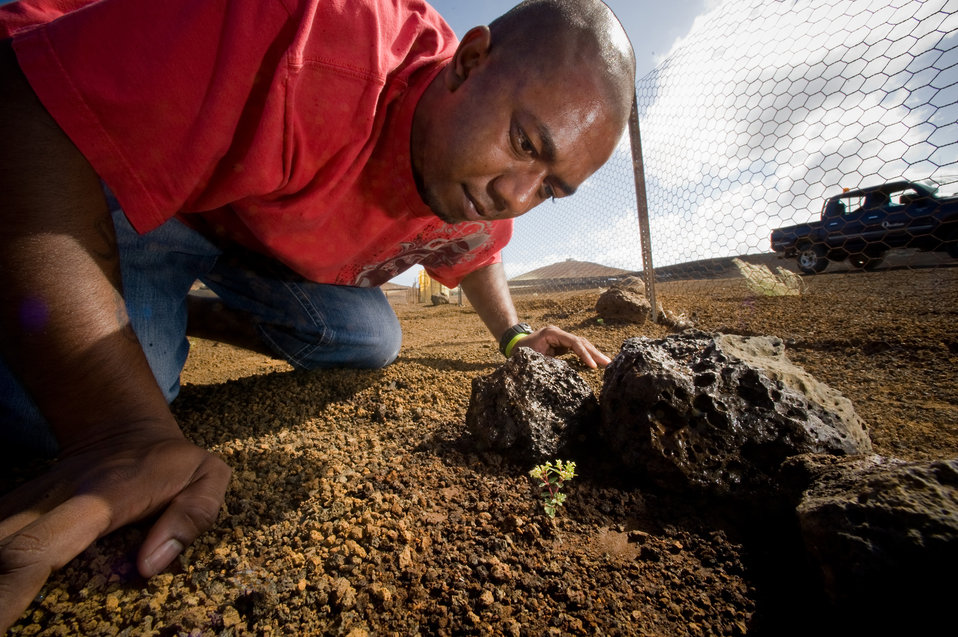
Robert's Plants

Robert Yon takes a break from a busy day to setup a wind break with some native volcanic rocks to protect the Ascension Spurge (E. origanoides), sprout, an endangered species of plant found only on the Ascension Island, and predominantly on the properties used by the 45th Operations Group, Detachment 2, Ascension Auxiliary Airfield (AAF), in the South Atlantic Ocean. Mr. Yon a certified environmental technician works with 13 protocols of engineering and the environment. Some of those are hazardous waste and PCB protocols. The small plot of land he cultivates supports seed collection by a British conservation organization on the island. Although, all U.S. Air Force bases have environmental programs, this small remote island environment allows easy observation of the efforts supporting the endangered spurge plant and self-sufficient water, power and waste programs.